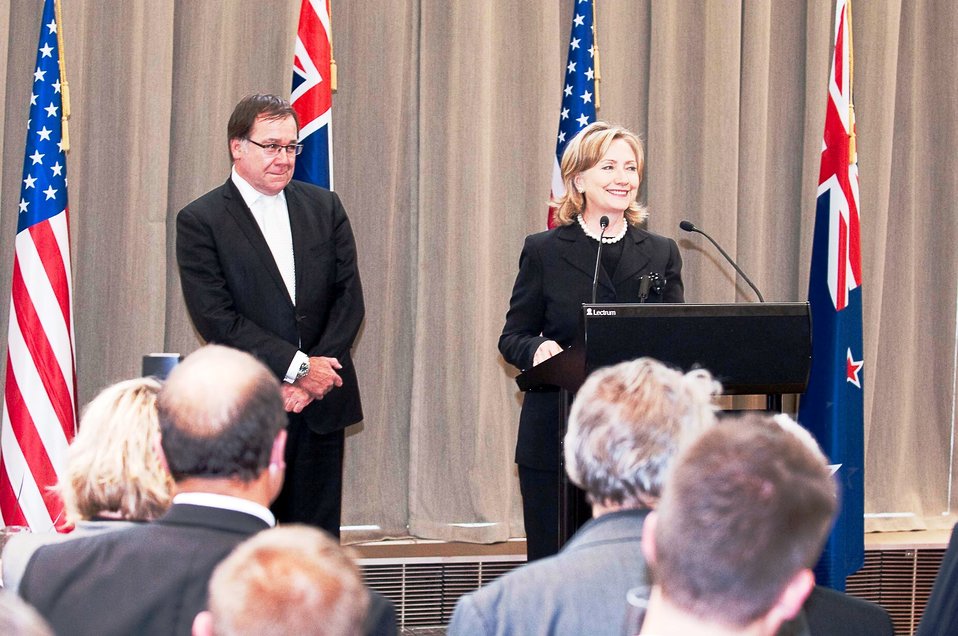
Secretary Clinton Speaks During a Reception Hosted By New Zealand Minister Foreign Minister McCully

U.S. Secretary of State Hillary Rodham Clinton speaks during a reception hosted by New Zealand Foreign Minister Murray MCully (left) in Wellington, New Zealand, on November 4, 2010.